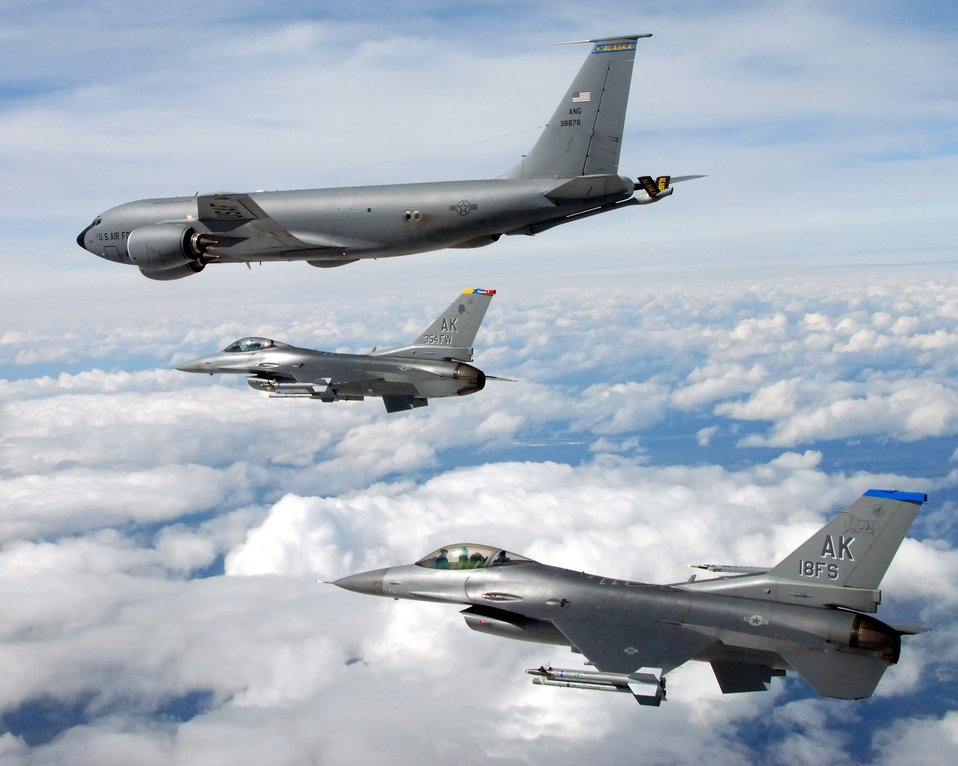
Final flight for fighters

A KC-135 Stratotanker from the Alaska Air National Guard's 168th Air Refueling Wing flies in formation with two F-16 Fighting Falcons from the 18th Fighter Squadron May 29 over Alaska. The three aircraft assigned to Eielson Air Force Base, Alaska, flew in formation for the last time due to the deactivation of the 18th and 355th Fighter Squadrons.